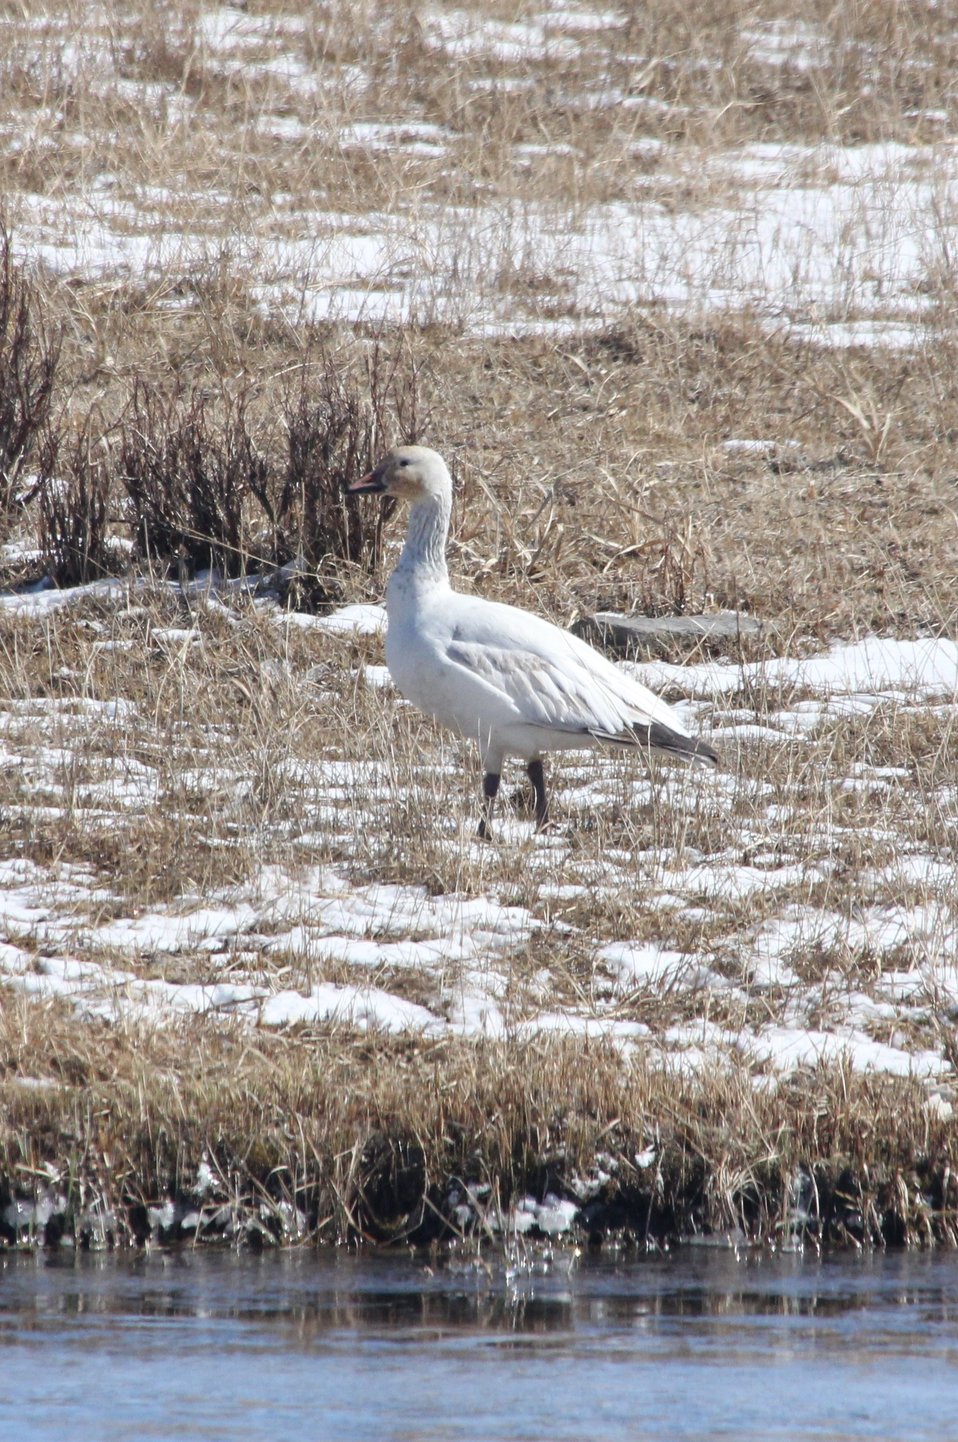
Visit by a Snow Goose

A snow goose stopped by the National Elk Refuge during its spring migration. During spring and fall, the geese will stop over in open habitats along four major North American flyways.

Credit: USFWS / Ann Hough, National Elk Refuge volunteer